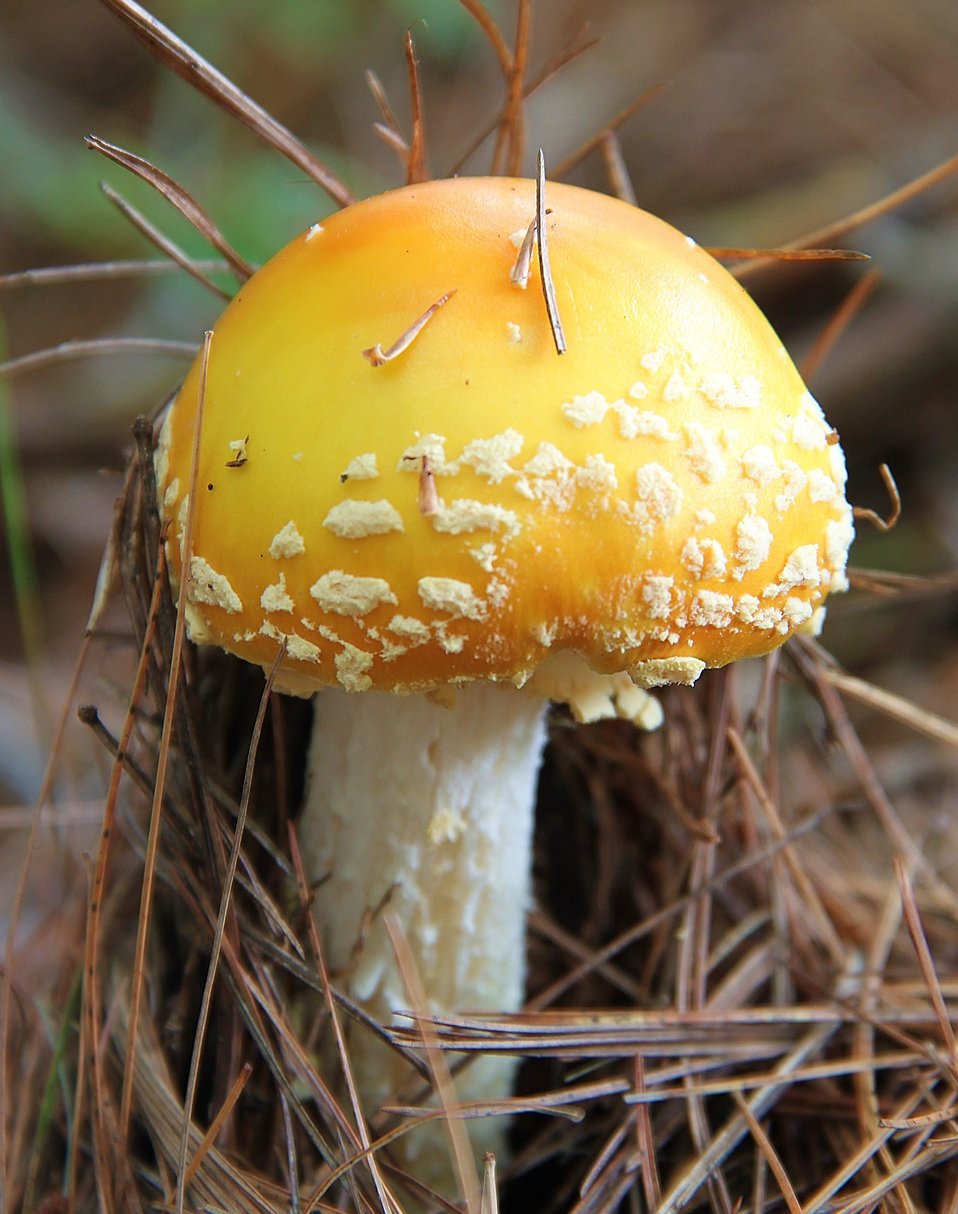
Aminita Mushroom

Missisquoi National Wildlife Refuge